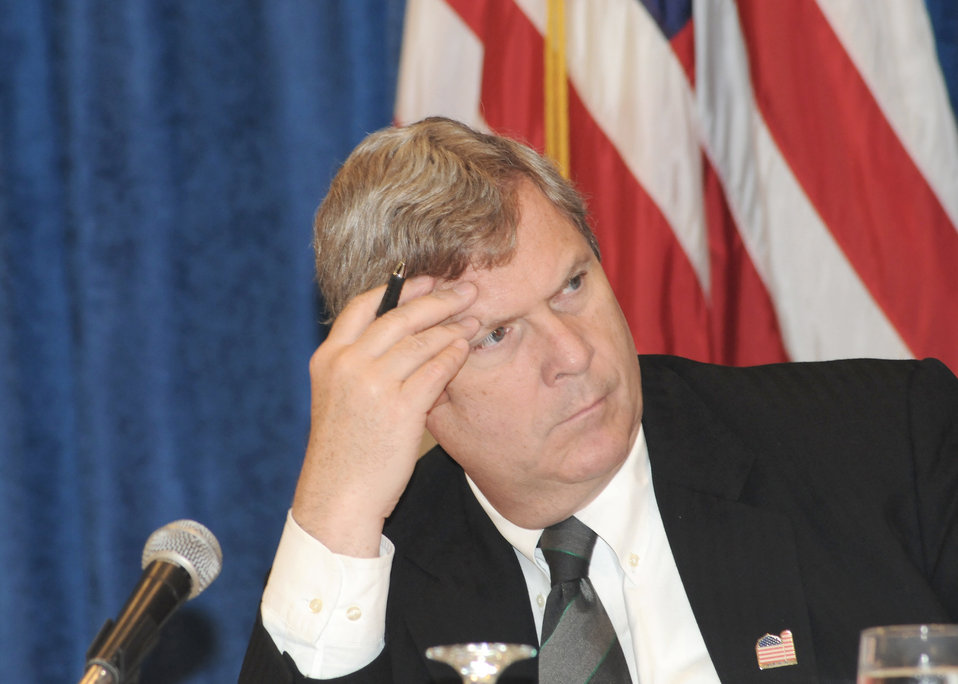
U. S. Department of Justice and the U.S. Department of Agriculture hold a listening session on “Agriculture and Antitrust Enforcement Issues in Our 21st Century Economy “ with poultry farmers at Alabama A & M University in Normal, AL on Friday, May 21, 2010. The late morning listening session had a panel consisting of nearby poultry farmers. Agriculture Secretary Tom Vilsack listens closely to the poultry farmers' concerns. USDA photo 10di1361-286